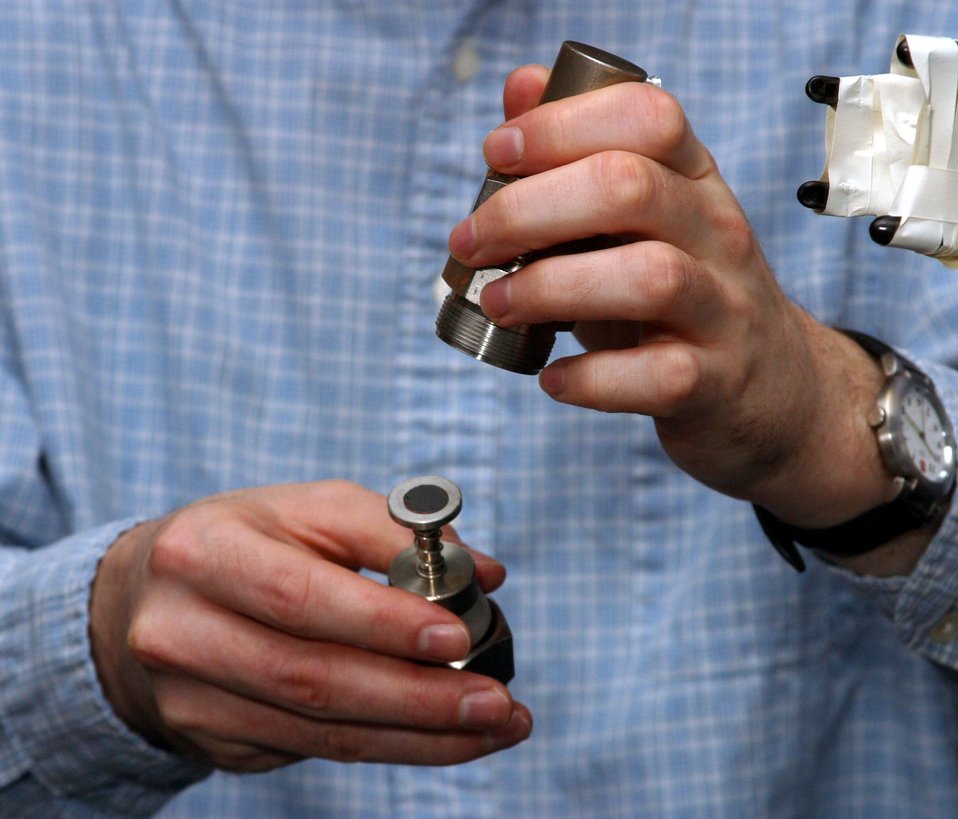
SANDIA RESEARCHER ASSEMBLES AN ELECTROCHEMICAL CELL TO TEST THE CAPACITY OF A SILICON/GRAPHITE ELECTRODE.

RESEARCHERS AT DOE'S SANDIA NATIONAL LABORATORIES DEVELOPED A NEW CLASS OF COMPOSITE ANODE MATERIALS COMPOSED OF SILICON AND GRAPHITE THAT MAY DOUBLE THE ENERGY STORAGE CAPACITIES CURRENTLY POSSESSED BY GRAPHITE ANODES, POTENTIALLY LEADING TO RECHARGEABLE LITHIUM-ION BATTERIES WITH MORE POWER, LONGER LIFE, AND SMALLER SIZES.